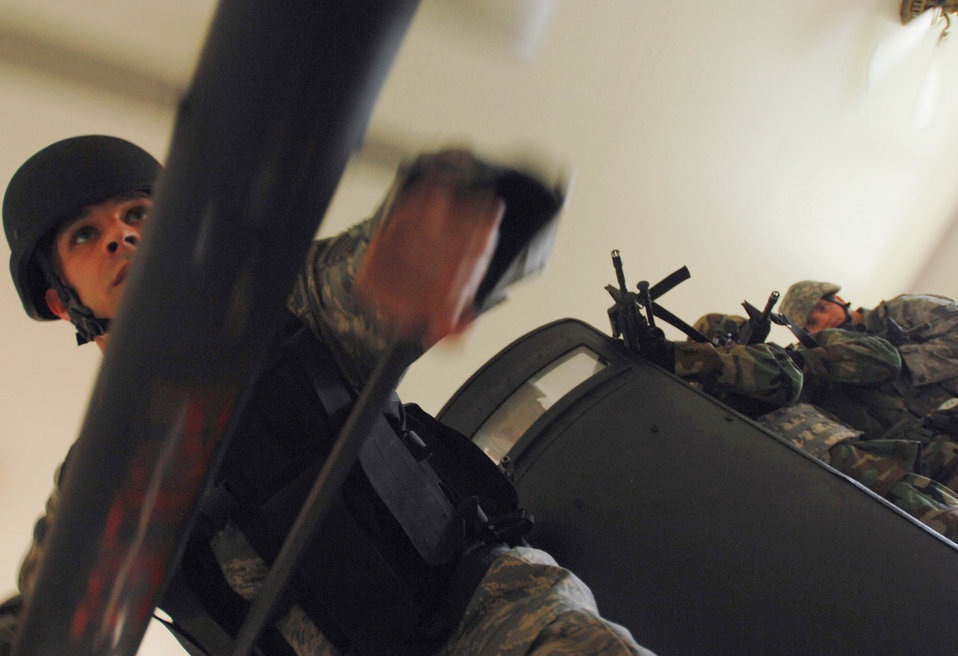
Special Emergency Response

Staff Sgt. Dean Martinez uses a breeching tool to knock down a barricaded door as the rest of the Security Forces Special Emergency Response Team members await access to the room during a counter-terrorism exercise June 9 at Eielson Air Force Base, Alaska. Training exercises keep security forces personnel current on policies and procedures involving hostage retrieval, barricade subjects and counter-terrorism.